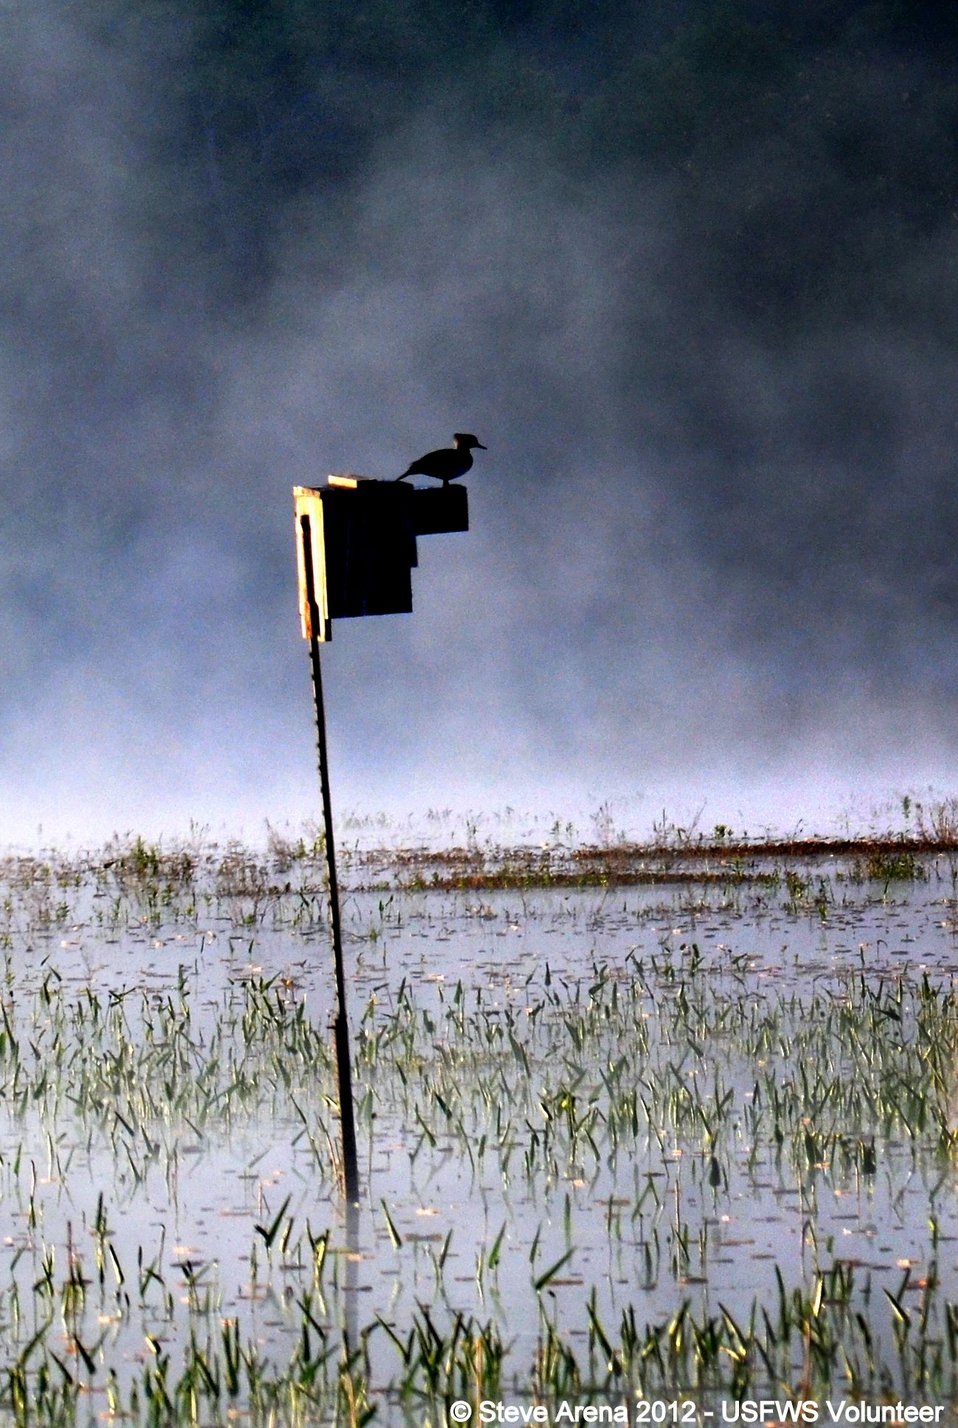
Hooded Merganser (Lophodytes cucullatus) hen greeting dawn from atop her nest box, Great Meadows NWR, Concord, MA

Hooded Merganser hen greeting dawn from atop her nest box, Great Meadows NWR, Concord, MA

Credit: Steve Arena/USFWS

18 May 2012